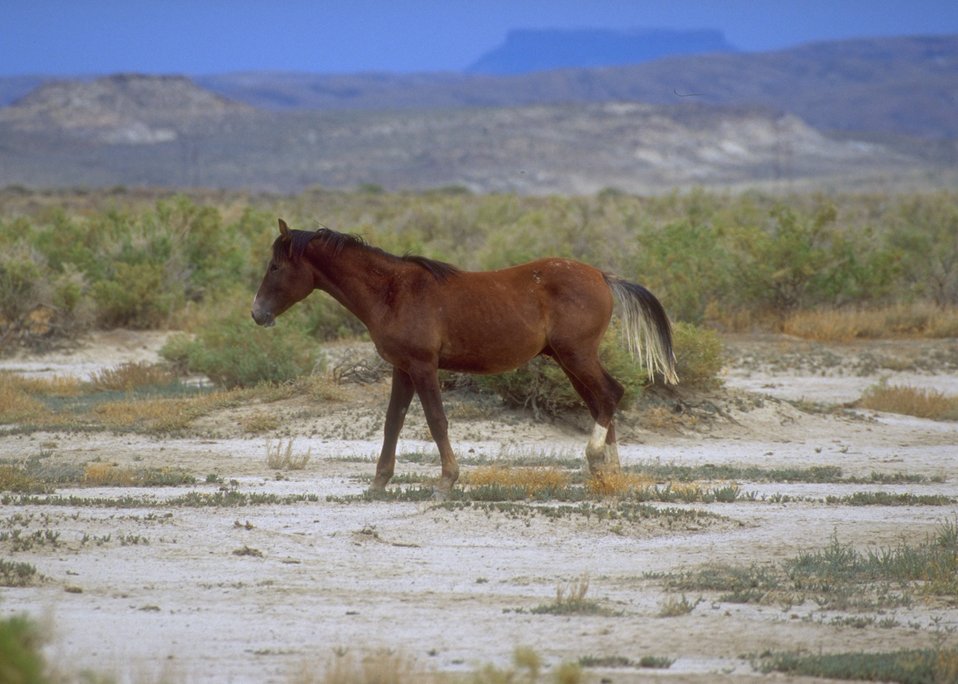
Wild horses, Rock Springs Field Office.